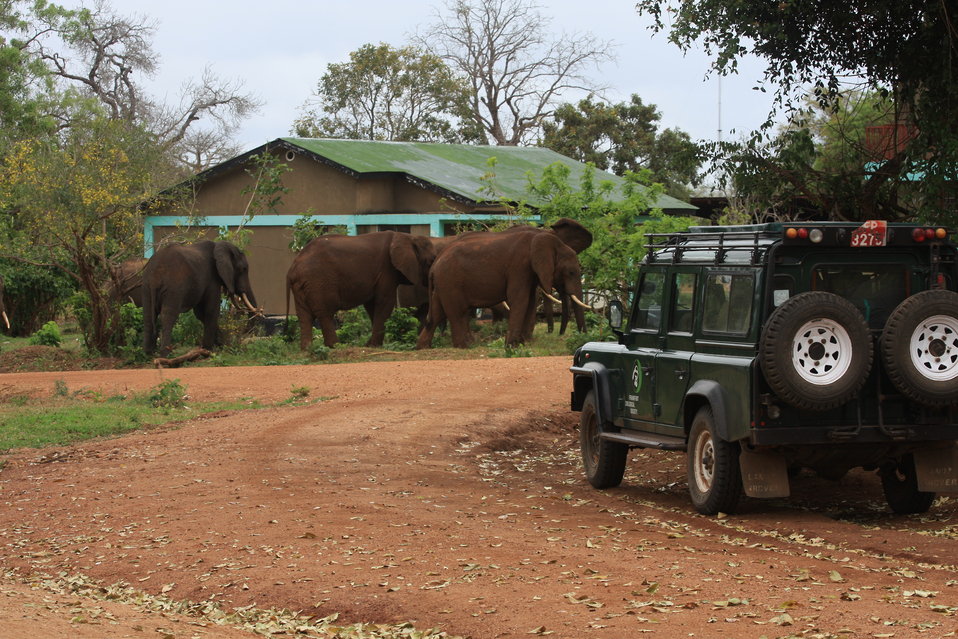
Elephant group

Elephants regularly come into the reserve headquarters at Matambwe in Selous, Tanzania.